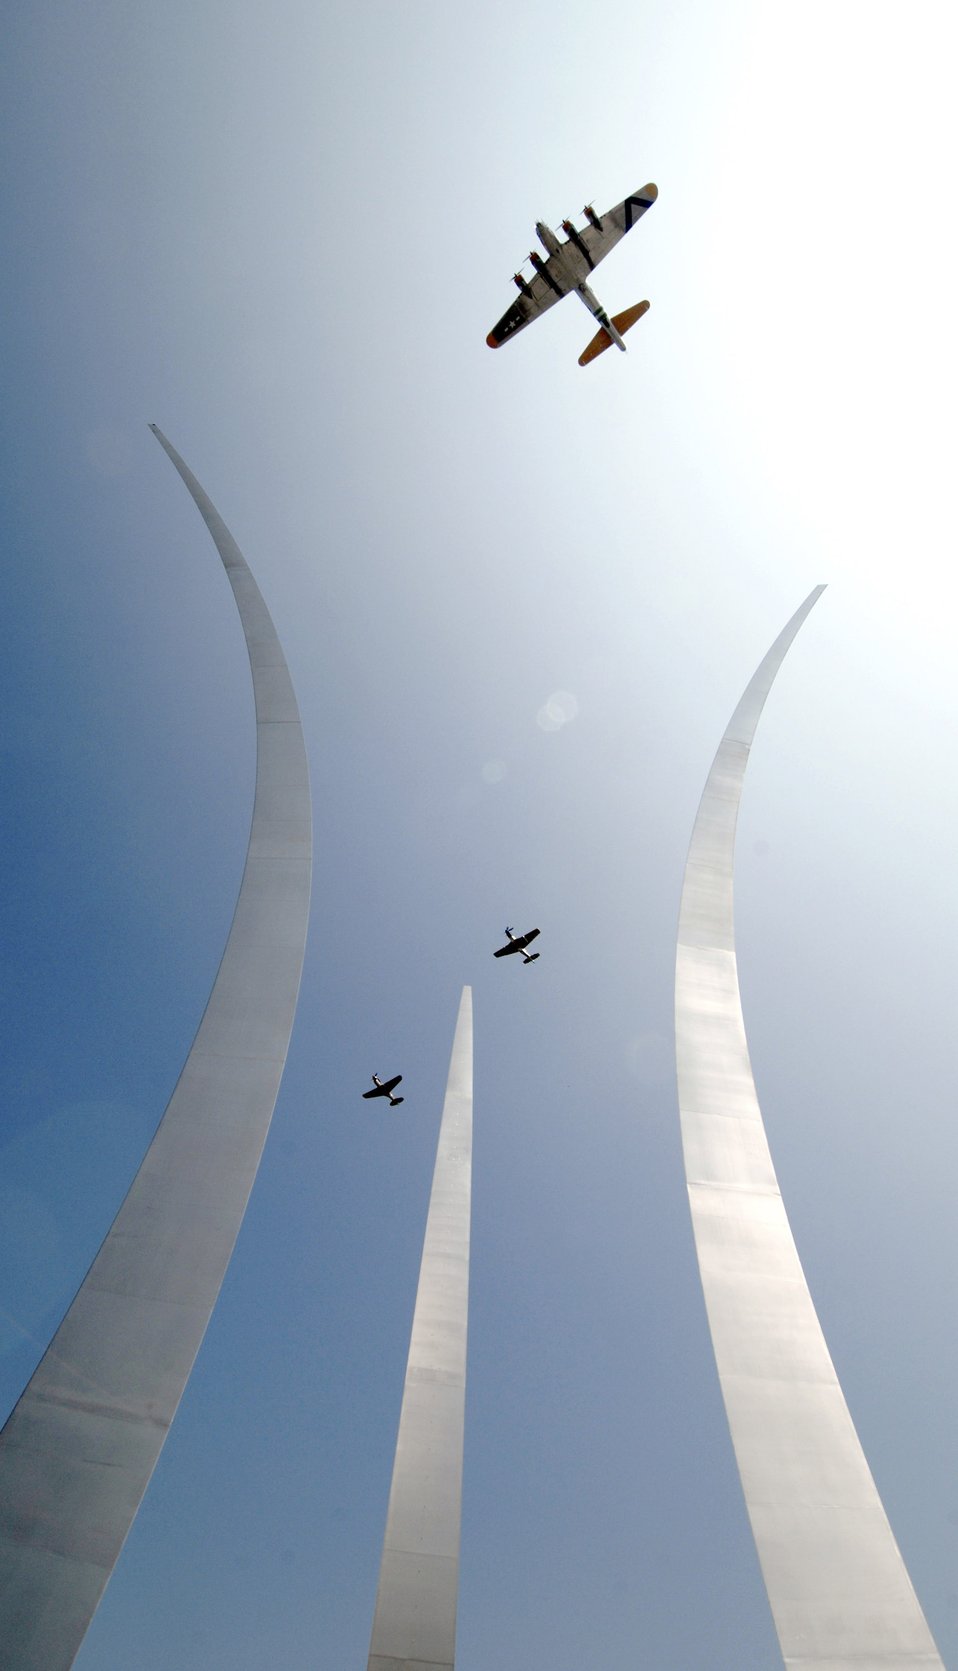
Heritage flight

A B-17 Flying Fortress (top of frame), a P-40 Kittyhawk and a P-51 Mustang soar over the spires of the Air Force Memorial April 10 in Arlington, Va. The three World War II-era planes flew over a ceremony honoring the 30,000 American Airmen who gave their lives flying from British bases during World War II. The event was arranged by the American Air Museum at Duxford, England, which is celebrating its 10th anniversary. The first Americans to serve in England were based at Duxford in 1918. During World War II it was also home to the 78th Fighter Group from 1943 to 1945. Former British Prime Minister John Major served as guest of honor for the ceremony.